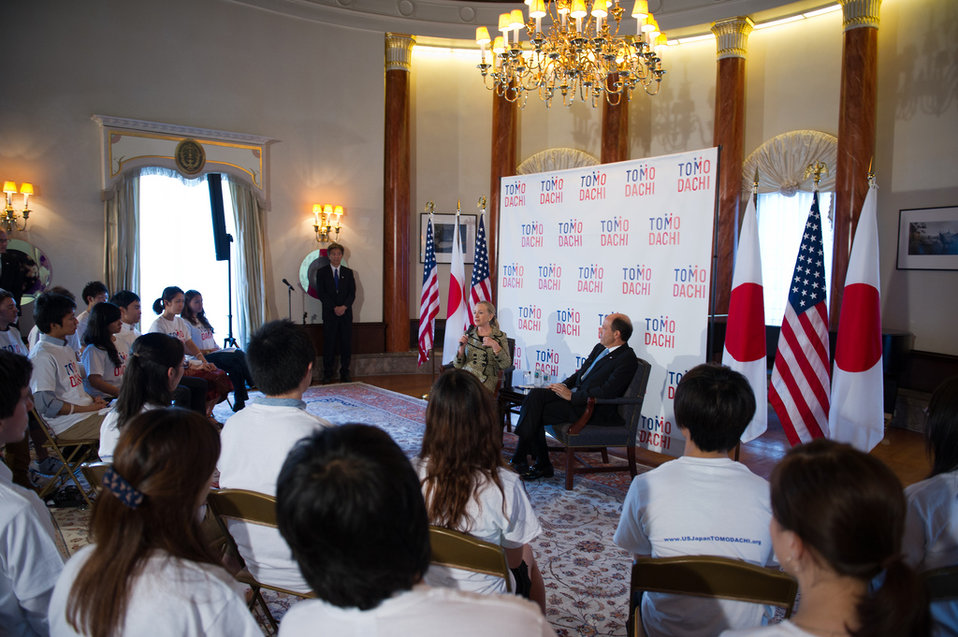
Secretary Clinton and Ambassador Roos Hold a Discussion With Tomodachi Program Youth

U.S. Secretary of State Hillary Rodham Clinton and U.S. Ambassador to Japan John Roos hold a discussion with Tomodachi program youth in Tokyo, Japan, on July 8, 2012.